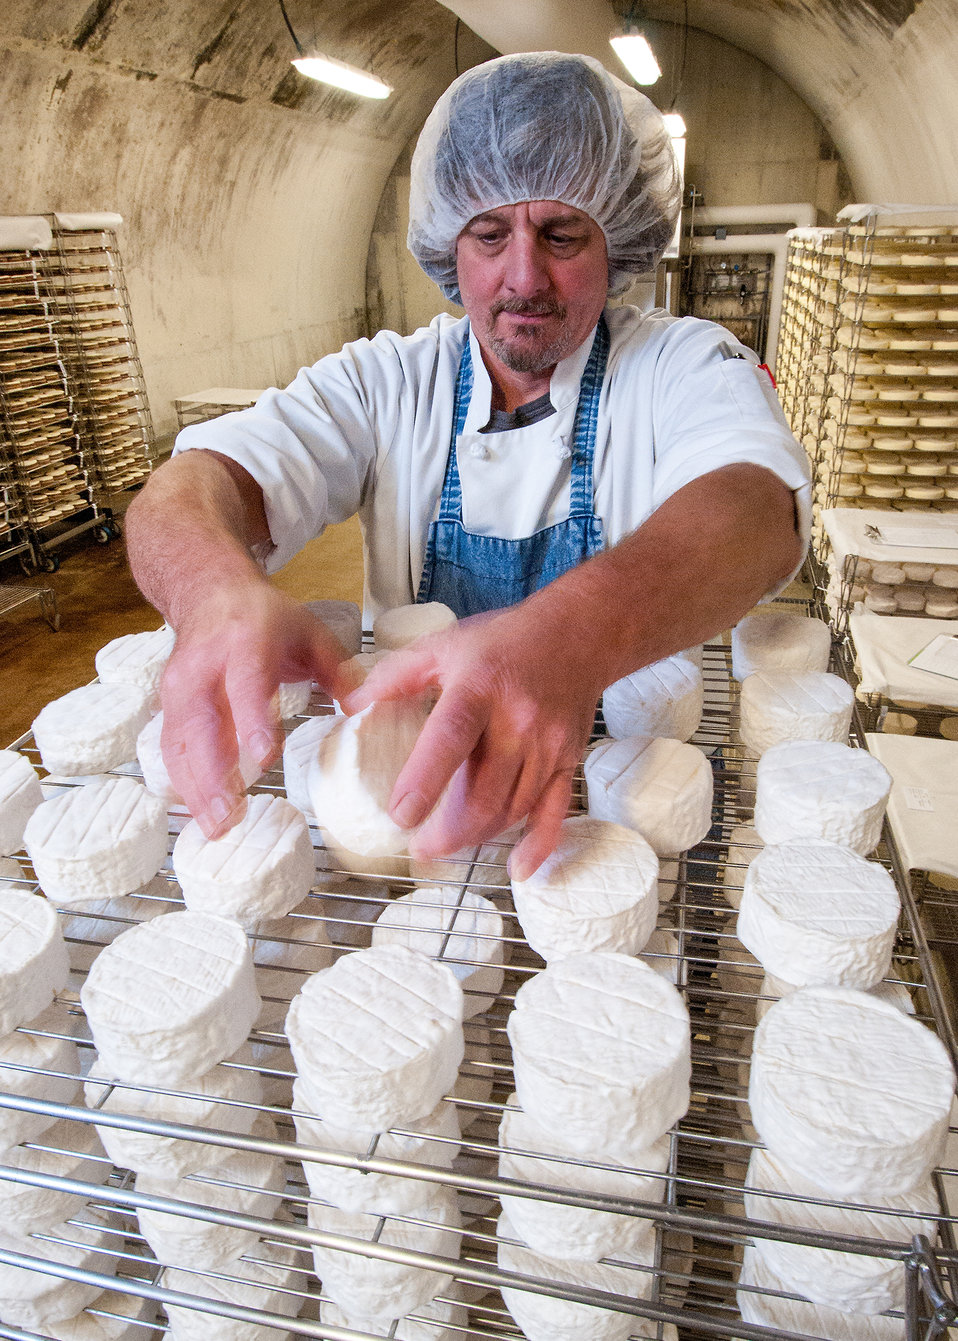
Moses Sleeper cheese is a bloomy-rind cheese developed at The Cellars at Jasper Hill in Greensboro, VT. Beneath a thin bloomy rind lies a gooey, milky core that shows a complex array of flavors: cauliflower, crème fraîche, and toasted nuts. The thin bloomy rind of this cheese is carefully cultivated in a vault at Jasper Hill dedicated to the proper rind development for this style of cheese. Moses Sleeper was a Revolutionary War-era scout who was shot on Vermont’s Northeast Kingdom’s legendary Bayley Hazen Military Road. The Cellars at Jasper Hill an innovative 22,000 square foot underground facility consisting of seven ageing caves received a U.S. Department of Agriculture (USDA) Rural Development (RD) Business and Industry Guaranteed (BIG) Loan. The loan was used to construct state-of-the-art artesian cheese aging cave facility to support expanded on-farm value-added cheese production as well as contract aging for other local cheese makers so they may access the growing market for artisan cheese nationwide on Sep. 19, 2013.